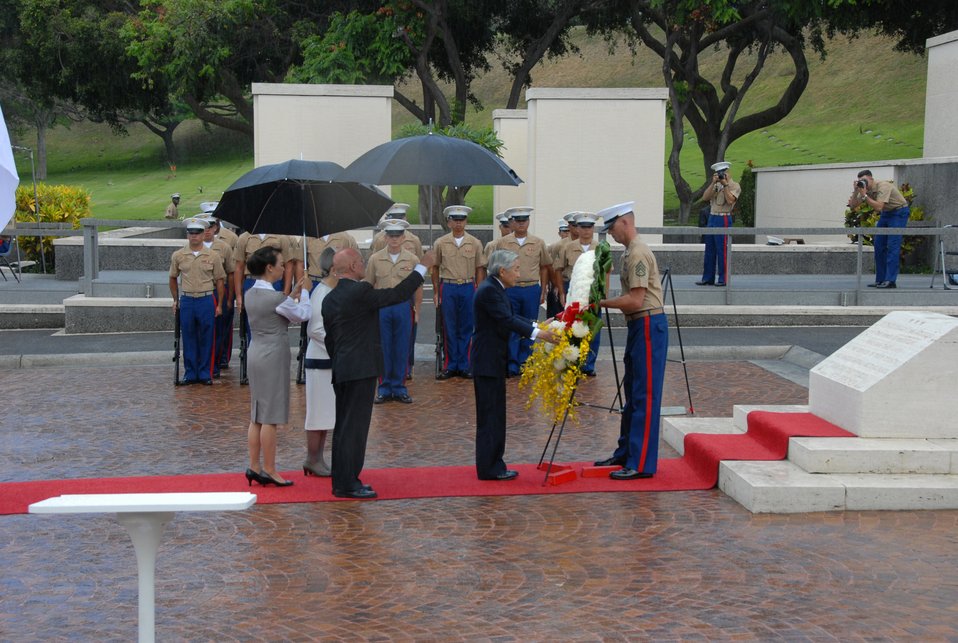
Japanese royalty honors America's fallen

Emperor Akihito, Emperor of Japan, lays a chrysanthemum wreath at the National Memorial Cemetery of the Pacific July 15 at Punchbowl Crater, Hawaii. Emperor Akihito and Empress Michiko paid tribute to those interred at the cemetery in a ceremony attended by Hawaii Gov. Linda Lingle, Navy Adm. Timothy Keating, U.S. Pacific Command commander and Pacific Air Forces Commander Gen. Howie Chandler. More than 50,000 service men and women are interred at the cemetery, roughly 13,000 who died in World War II.